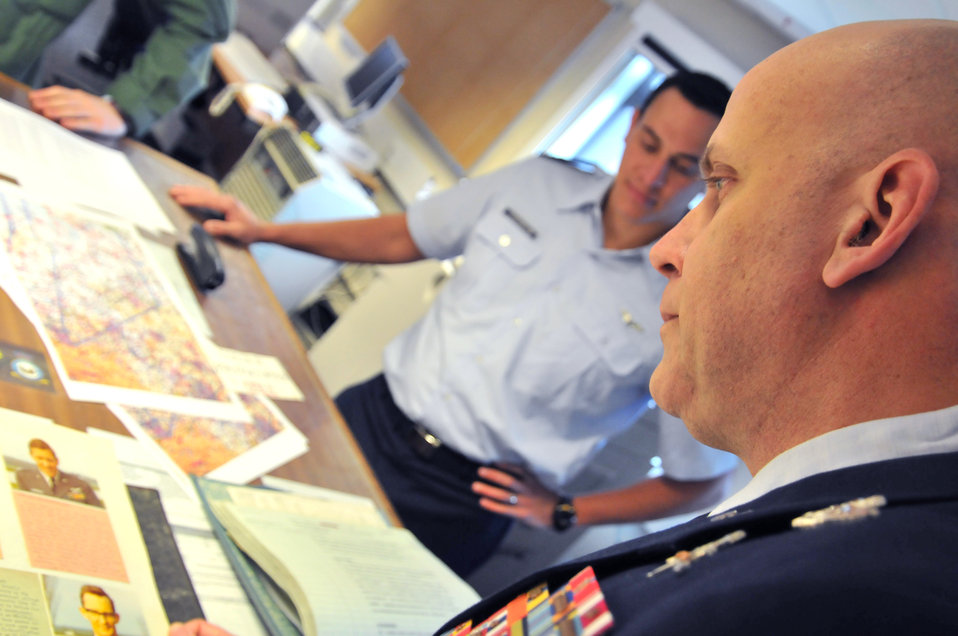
MSgt Distelweig

Master Sgt. Louis Distelsweig looks at a picture of his father, Capt. Louis Distelsweig Jr., in an album at No. 1 Squadron Jan. 11, 2011, at Royal Air Force Cottesmore, England. Sergeant Distelsweig visited RAF Cottesmore to view the Harrier aircraft his father flew in the 1970 as an exchange pilot. Sergeant Distelweig is a pararescueman with the 56th Rescue Squadron at RAF Lakenheath.